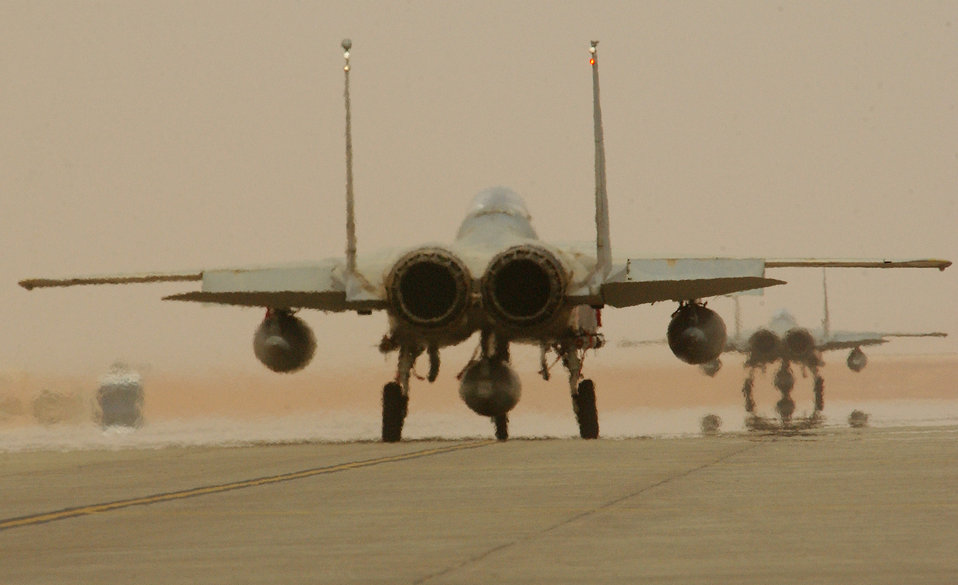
Dual Eagles

OPERATION IRAQI FREEDOM -- Two F-15 Eagles assigned to the 363rd Air Expeditionary Wing prepare to take off for a mission from a forward-deployed location in Southwest Asia on March 27. According to a defense official, coalition air forces are averaging about 1,000 sorties a night after the first week of Operation Iraqi Freedom. The Air Force has also dropped more than 5,000 precision-guided munitions.